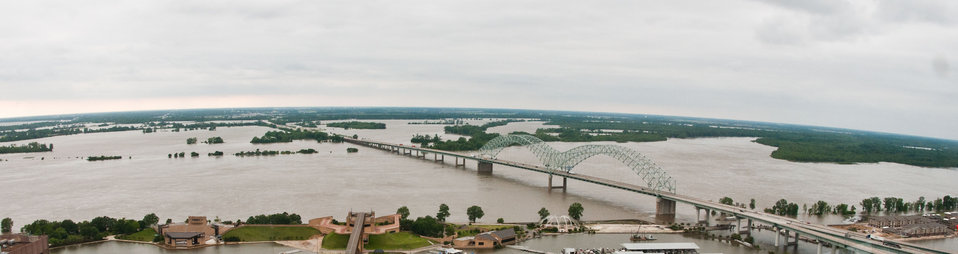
Aerial view a few days after the floodwaters crested the Mississippi River in Arkansas and Tennessee, on Saturday, May 14. 2011.